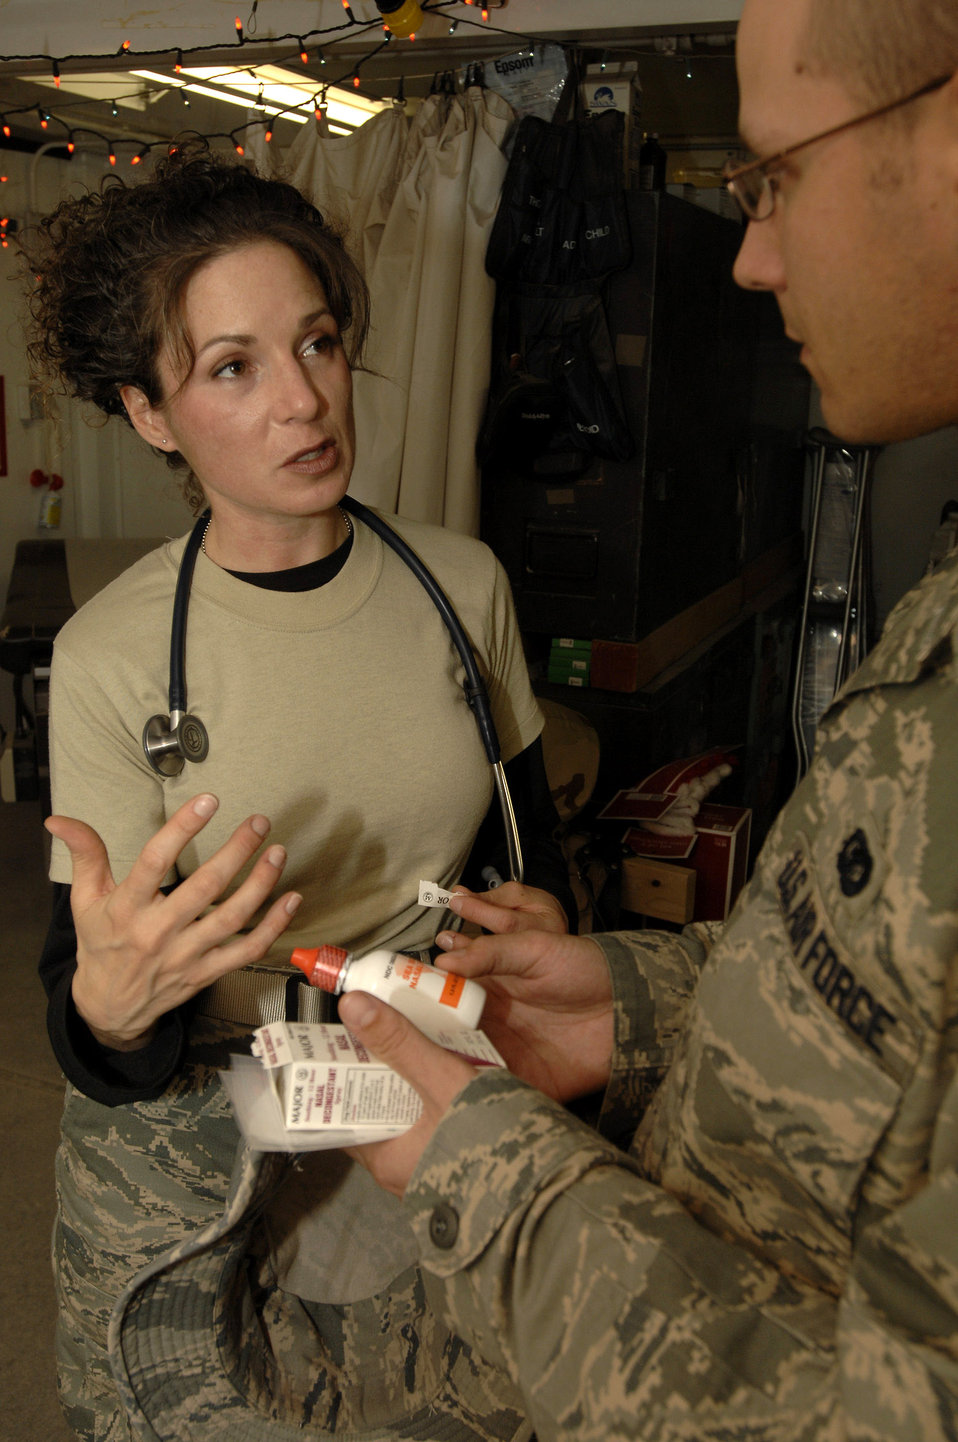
Show me where it hurts

Physician Assistant Capt. Courtney Lee instructs a patient on when and how much medication to take for his cold Dec. 11in the 407th Expeditionary Medical Squadron Clinic at Ali Base, Iraq. Captain Lee is responsible for the care of Air Force personnel on base and is one of ten PAs who are emergency medicine certified. Captain Lee is deployed from Travis Air Force Base, Calif.